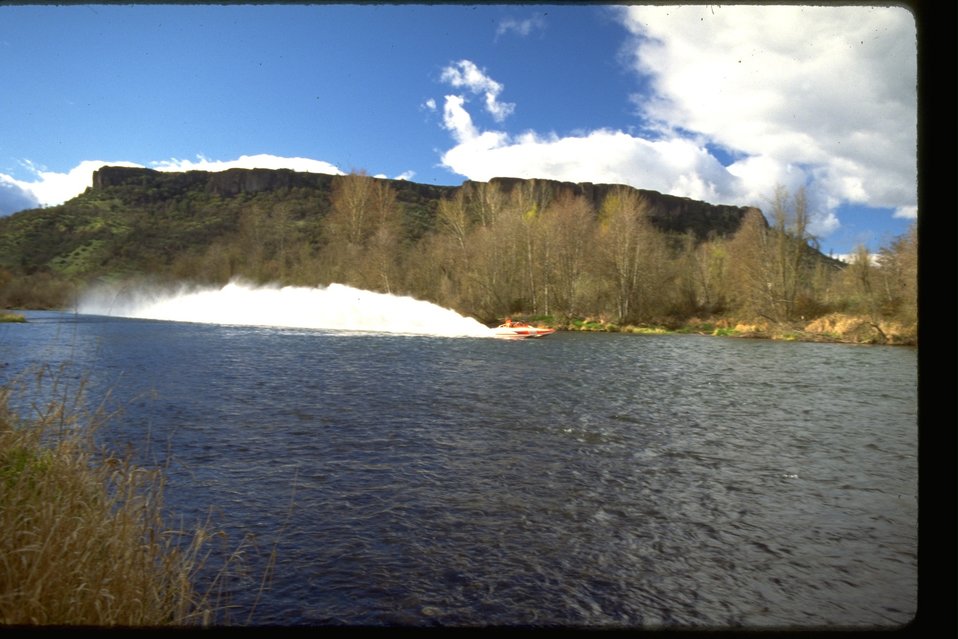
A jet boat is spraying up water in the Rogue River along the Lower Table Rock.